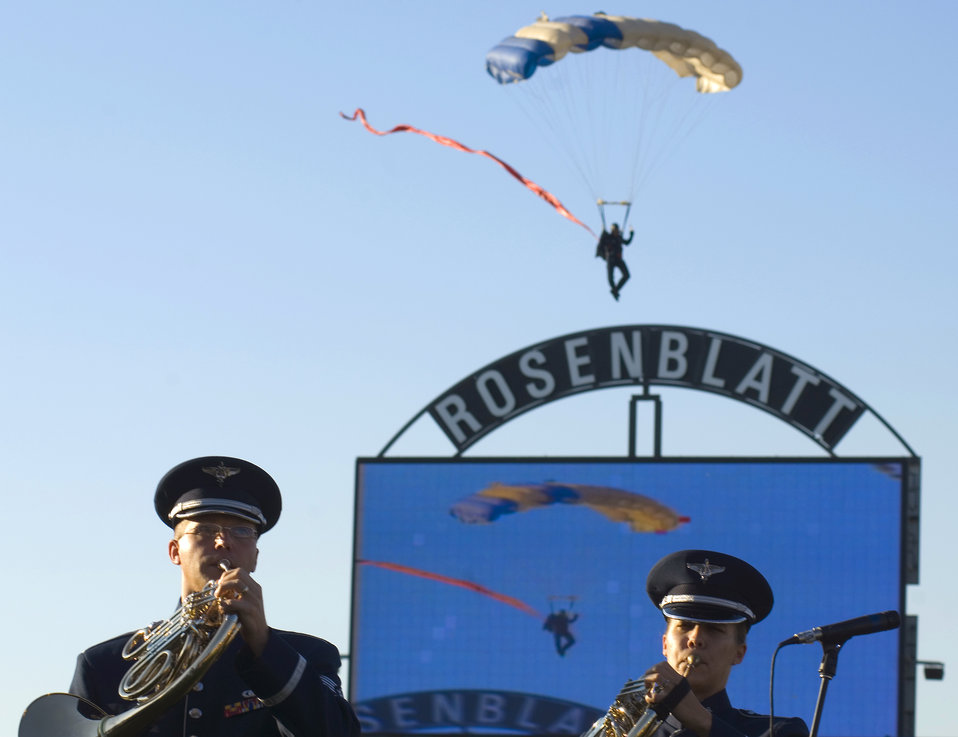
Air Force Week in the Heartland kicks off with a bang

Members of the Heartland of America Band play while the U.S. Air Force Academy Wings of Blue jump team fly into Rosenblatt Stadium during opening ceremonies for Air Force Week in the Heartland Aug. 9 in Omaha, Neb. The week is designed to broaden awareness of the Air Force's role in the war on terrorism and strengthen support for Airmen serving worldwide in defense of freedom.